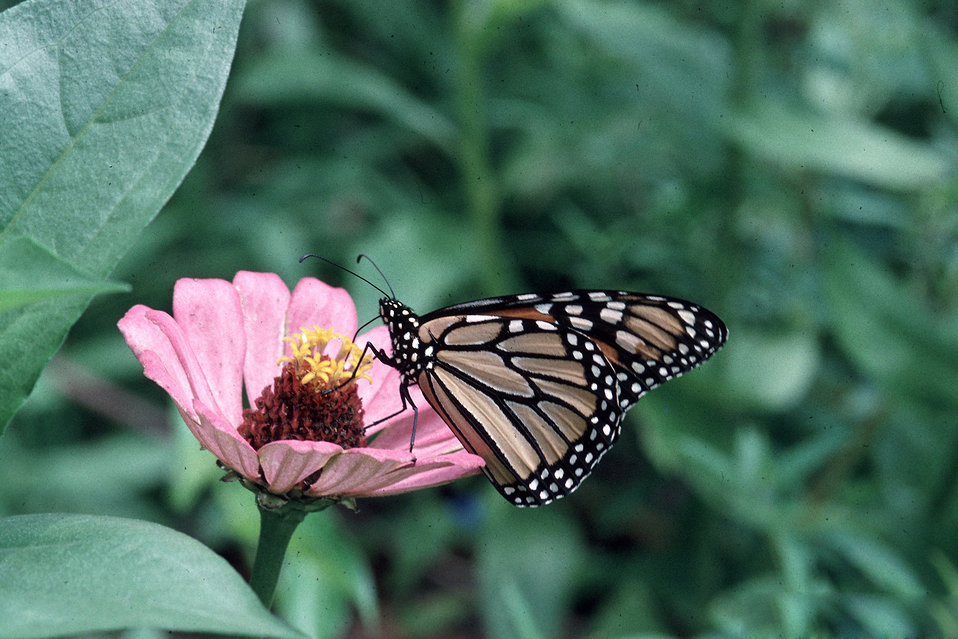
A monarch butterfly collects nectar from a flower. Butterflies are one of nature’s many pollinators for flowers and crops and are crucial in production for fruits and vegetables.